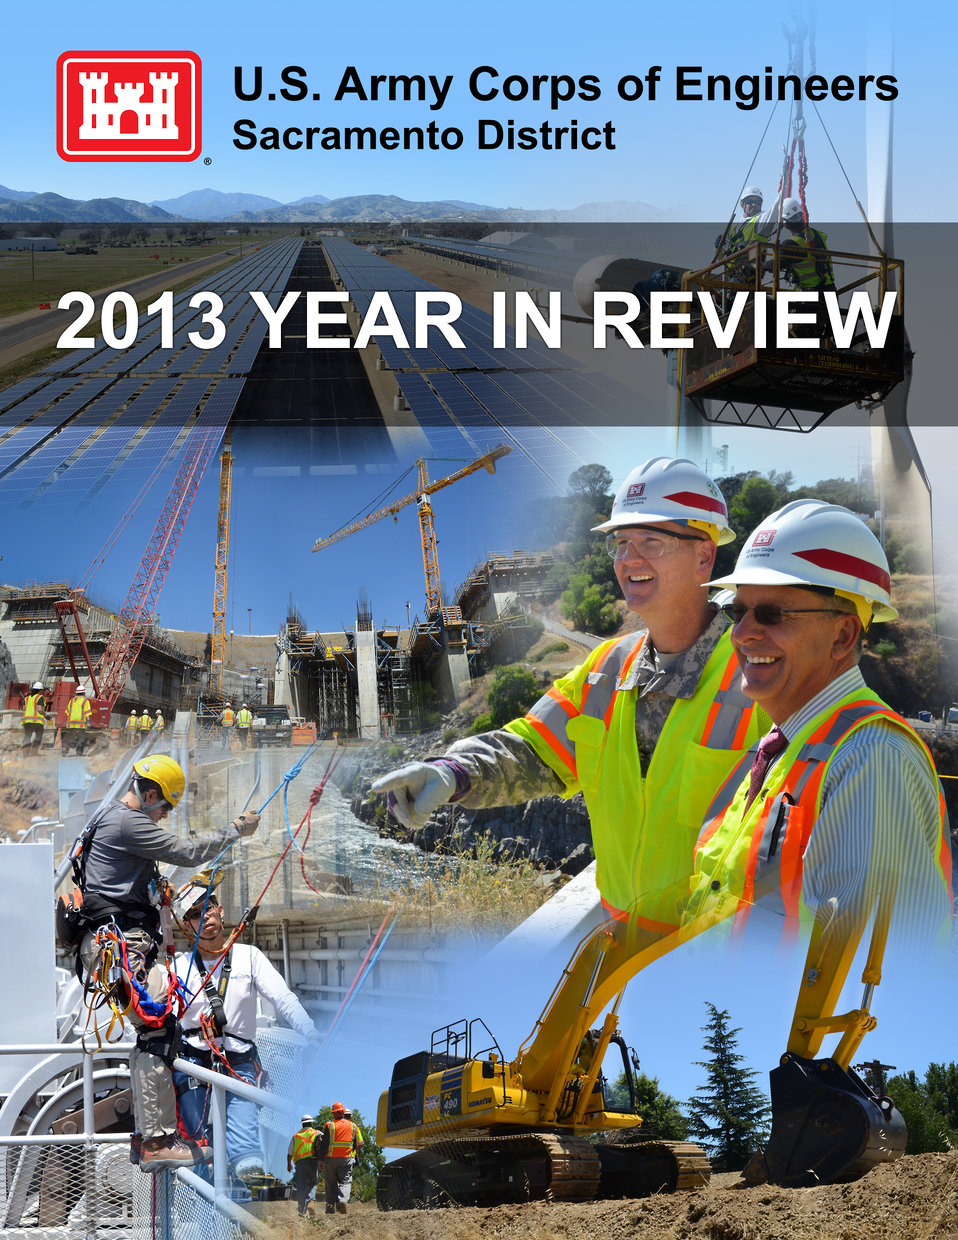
2013 Year in Review

Infrastructure modernization, renewable energy projects and environmental restoration were some of the major themes of a very productive 2013 for us. Check out the highlights in this 2013 year in review photo gallery. flic.kr/s/aHsjPNoVhD